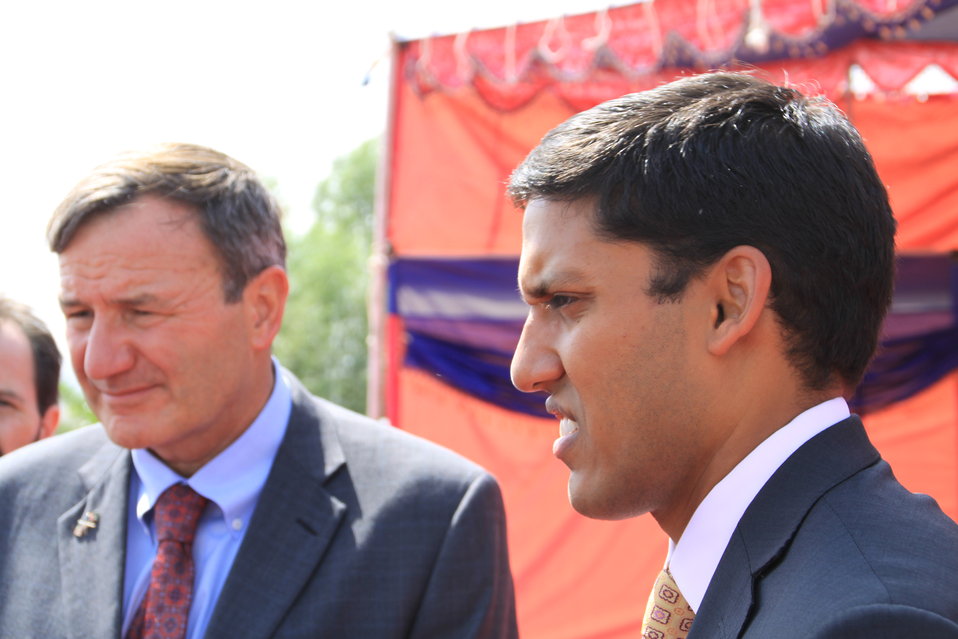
Baddam Bagh Farm